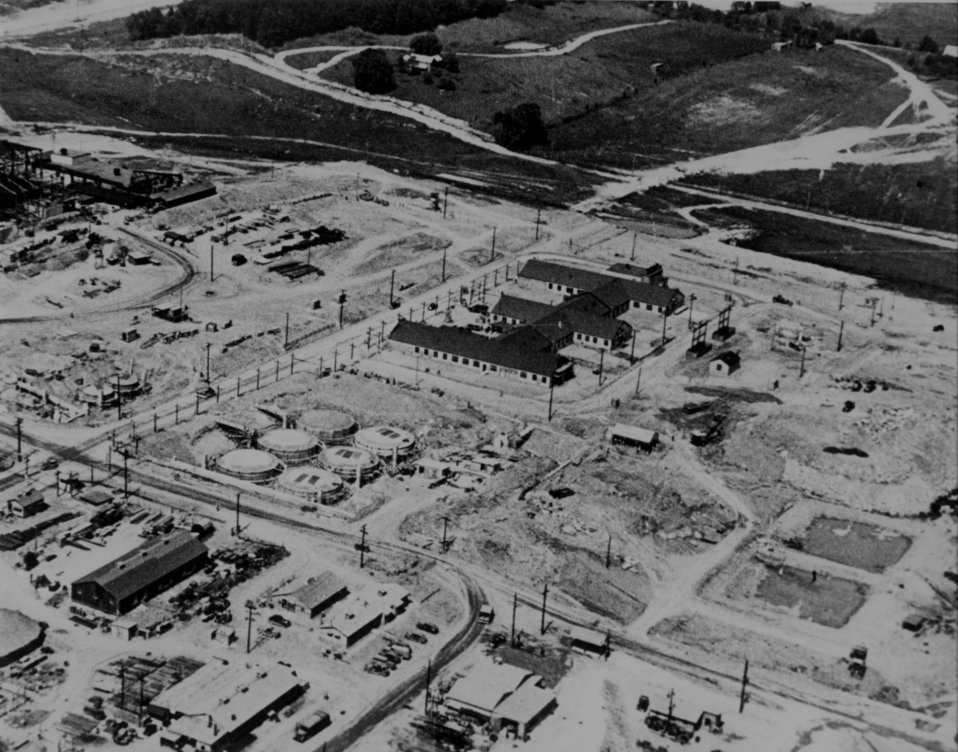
3

roll 76-13 file# 64 8/31/43